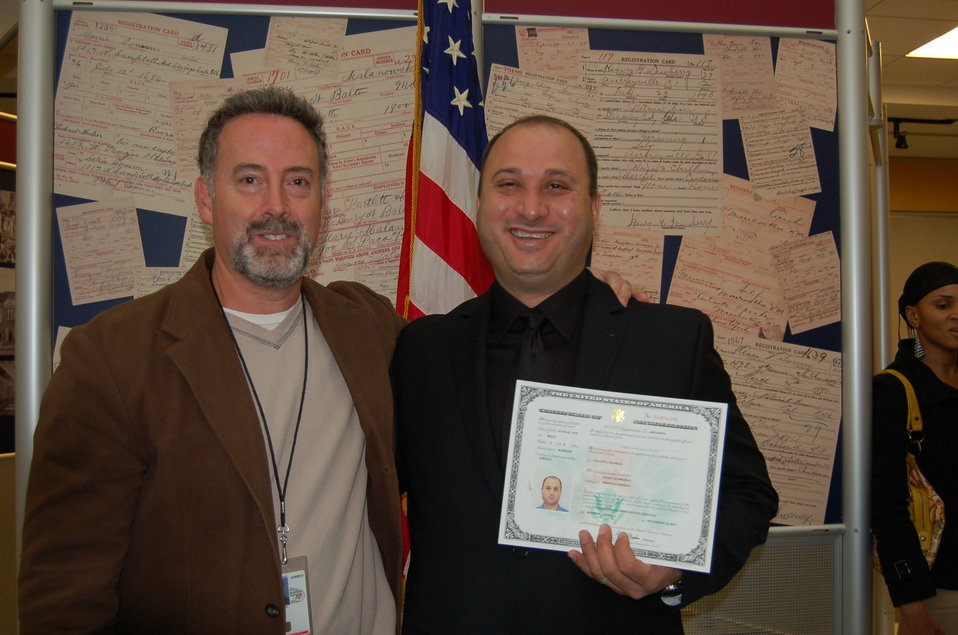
New Citizens